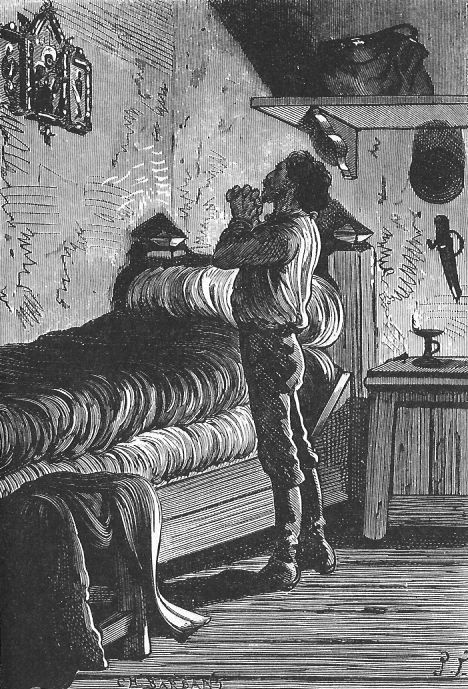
An illustration from the novel 'Michael Strogoff: The Courier of the Czar' by Jules Verne drawn by Jules Férat. Polski: Ilustracja powieści Juliusza Verne'a 'Michał Strogow, kurier carski' autorstwa Julesa Férata. Français : 'Michel Strogoff. Le courier du tzar', Jules Férat. Français : « Pour la patrie et pour le Père ! » murmura-t-il.